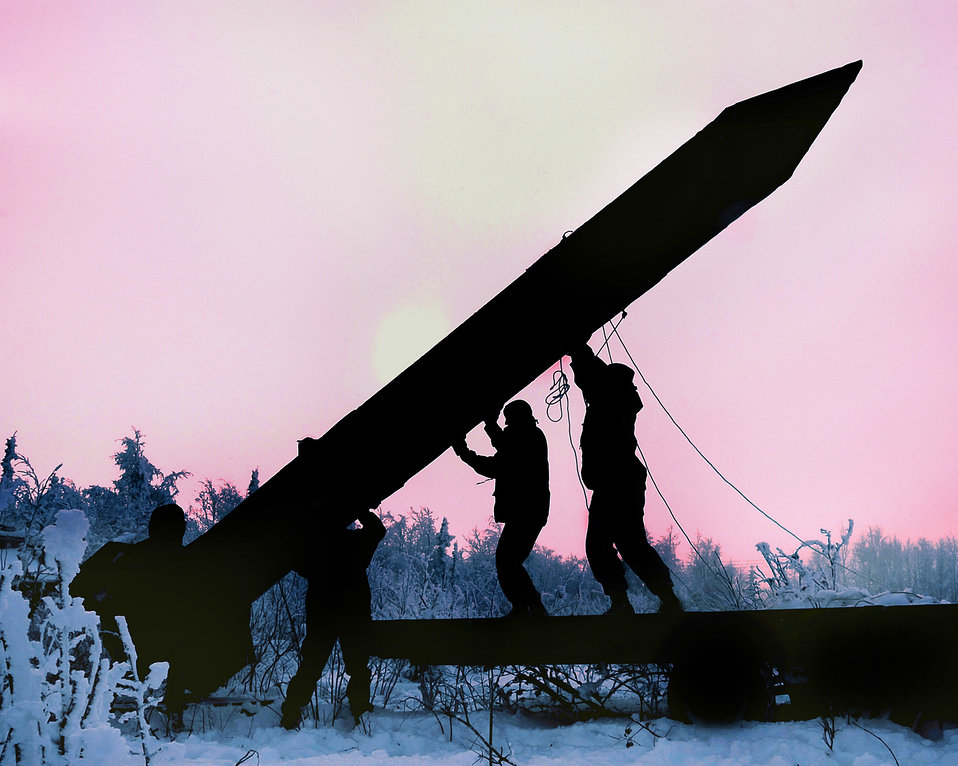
Adding realism to the exercise

Airmen from Eielson Air Force Base, Alaska, raise a dummy Scud on to a mock launching platform to enhance air combat operations Oct. 8 during Red Flag-Alaska.